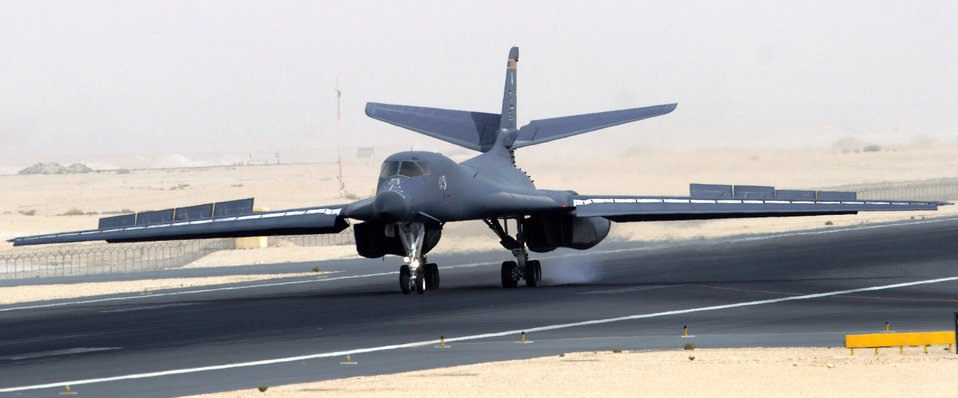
Oct. 7 airpower summary: B-1Bs strike anti-Afghan forces

A B-1B Lancer goes full flaps and hits the brakes to stop after completing another combat mission recently. The B-1B is deployed from Ellsworth Air Force Base, S.D., to an undisclosed air base in support of Operations Iraqi and Enduring Freedom.